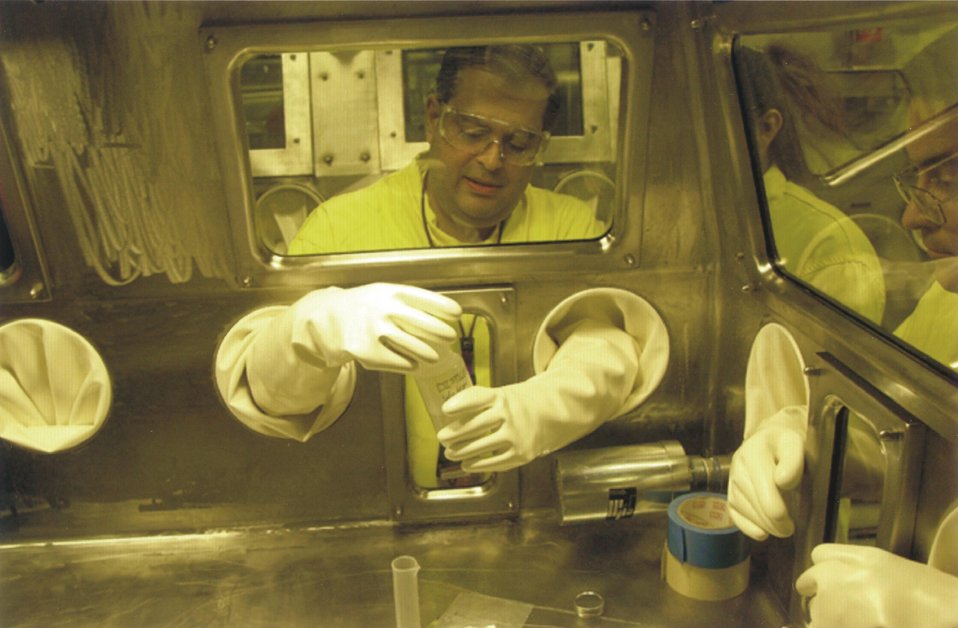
SECRETARY OF ENERGY SPENCER ABRAHAM LEARNS TO OPERATE A GLOVE BOX.